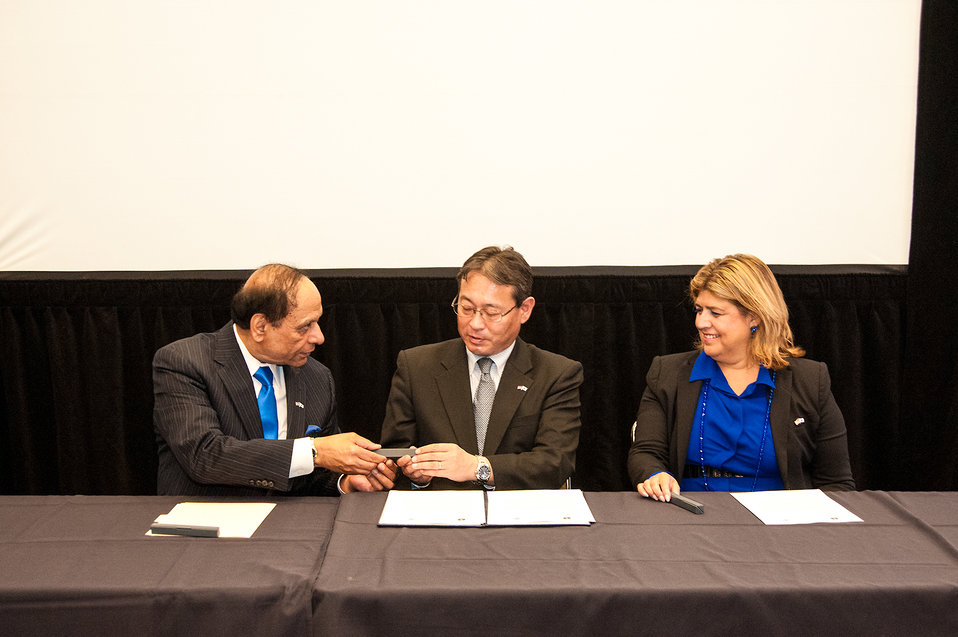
(L to R) U.S. Trade Representatives Ambassador Islam Siddiqui Islam Siddiqui, Japan’s Forestry and Fishery Ministry of Agriculture Division of Food Safety and Consumer Affairs Bureau Director of Labeling and Standards Satoshi Kunii Satoshi Kunii, and U.S. Department of Agriculture (USDA) Agricultural Marketing Service (AMS) Administrator Anne Alonzo sign a memorandum of understanding prior to announcing an important trade agreement with Japan for USDA’s National Organic Program at the Natural Products Expo East conference in Baltimore, MD on Thursday, Sep. 26, 2013.